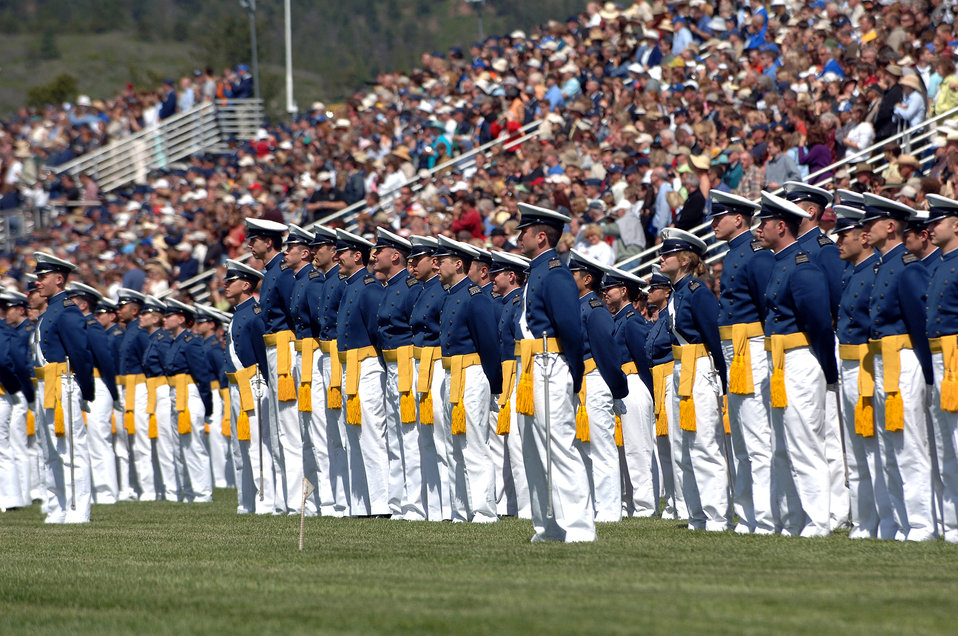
Parade preps Class of 2007 for graduation

Senior cadets stand at parade rest during the 2007 Graduation Parade May 29 at the U.S. Air Force Academy in Colorado. The graduation for the U.S. Air Force Academy's Class of 2007 will be held at 10 a.m. May 30 at Falcon Stadium. Secretary of Defense Dr. Robert M. Gates will be the guest speaker. Special needs of future Air Force officers are met by professionally oriented courses, including human physiology, computer science, economics, military history, astronautics, law and political science.